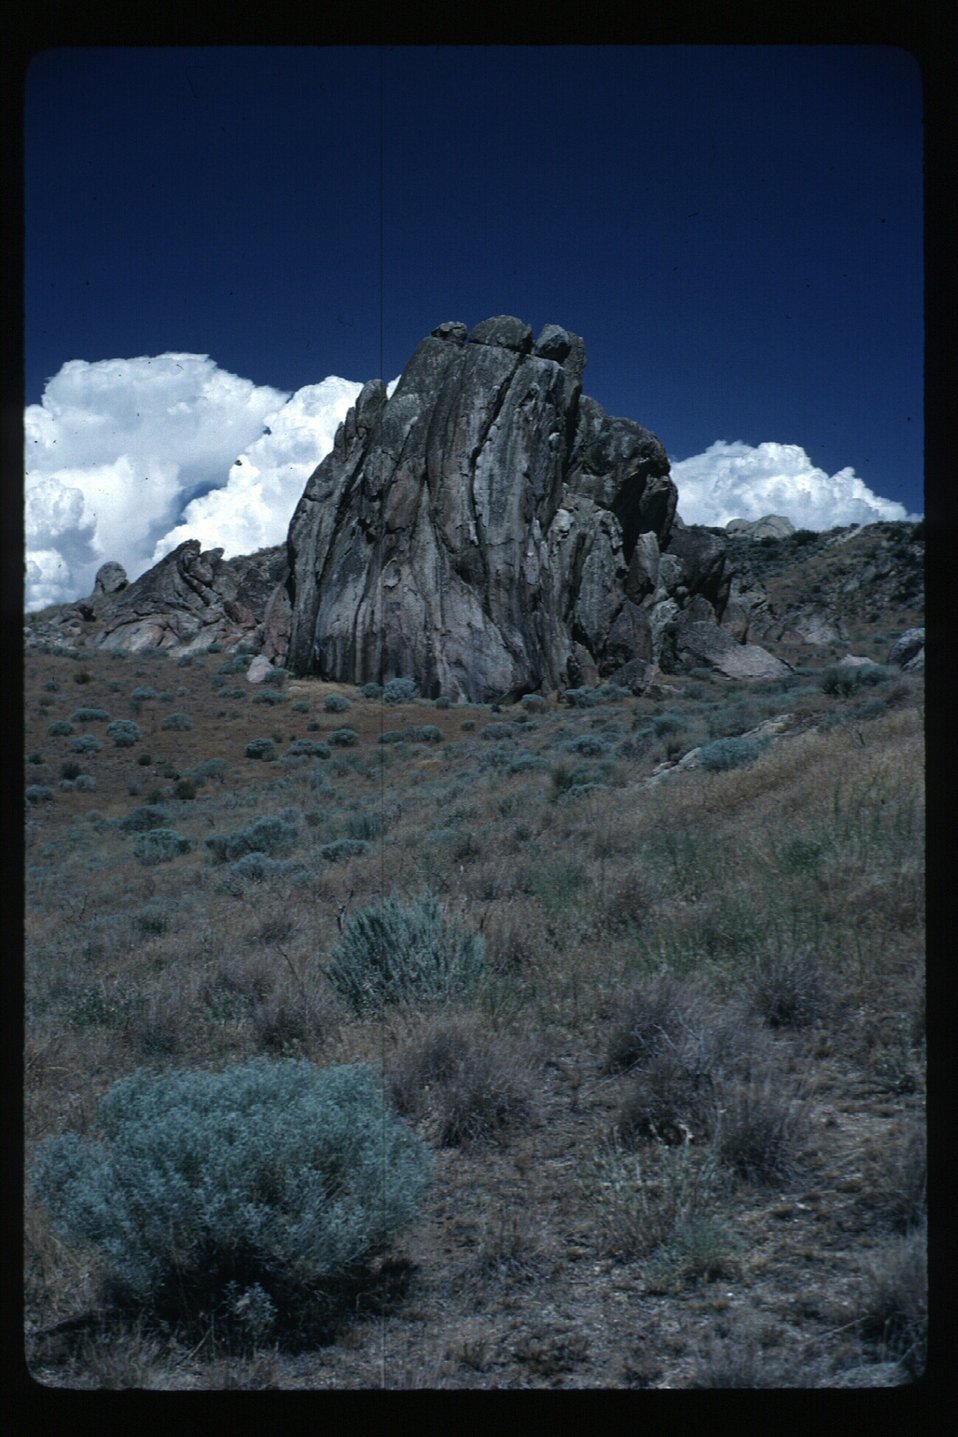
Danskin Mountains Four Rivers Field Office LSRD Lower Snake River District